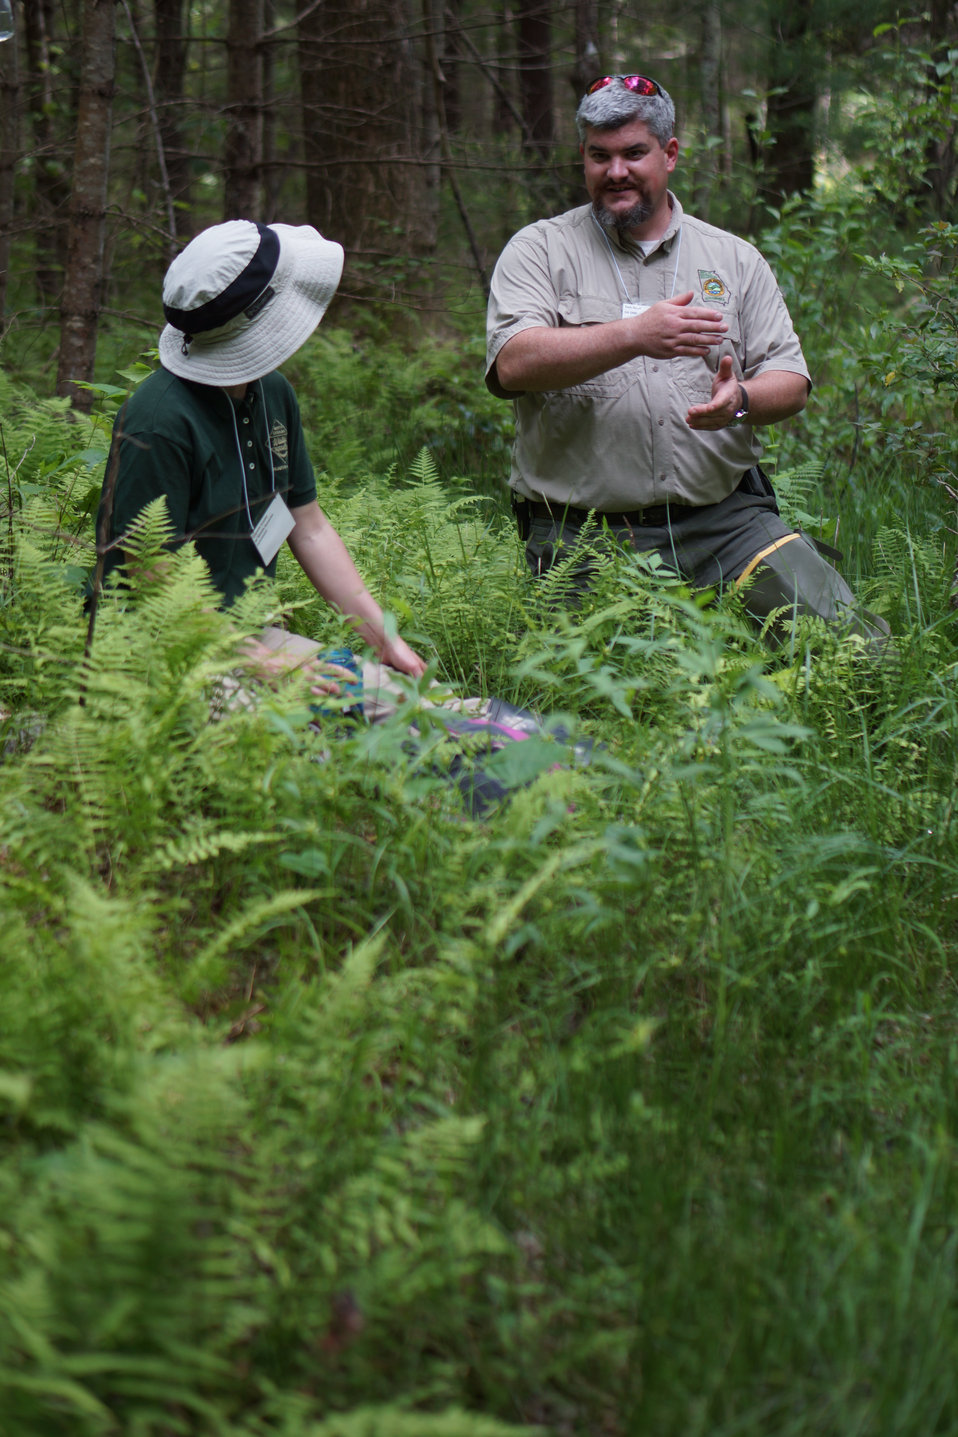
Gabrielle Graeter and Thomas Floyd

In May, bog conservationists from Tennessee, North Carolina, and Georgia convened in the north Georgia mountains for the spring, 2014 meeting of the Bog Learning Network. The event provided an opportunity for biologists to see, first hand, the result of management efforts at two north Georgia bogs. More importantly, the outings provided an opportunity to share innovative approaches to bog management, such as the role of the Georgia Plant Conservation Alliance in conserving rare plants and coordinating a cadre of volunteers to work on bog management.

The Bog Learning Network was convened in the winter of 2013 as a way to bring together people working for bog conservation across the Southern Appalachians. Southern Appalachian bogs are one of North America’s rarest habitats and home to many rare plants and animals.